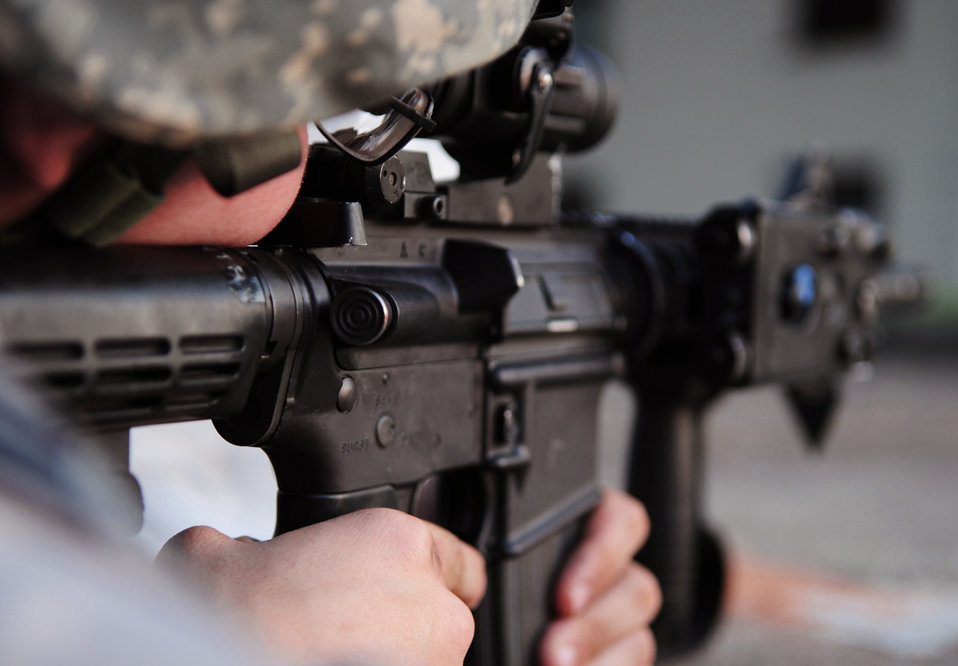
Staying steady

Senior Airman Patrick Stanton takes aim May 23, 2010, during an operational readiness exercise at Ramstein Air Base, Germany. An ORE incorporates events that evaluate a wing's ability to perform accurately in a timely manner. Airman Stanton is with the 86th Security Forces Squadron at Ramstein AB.